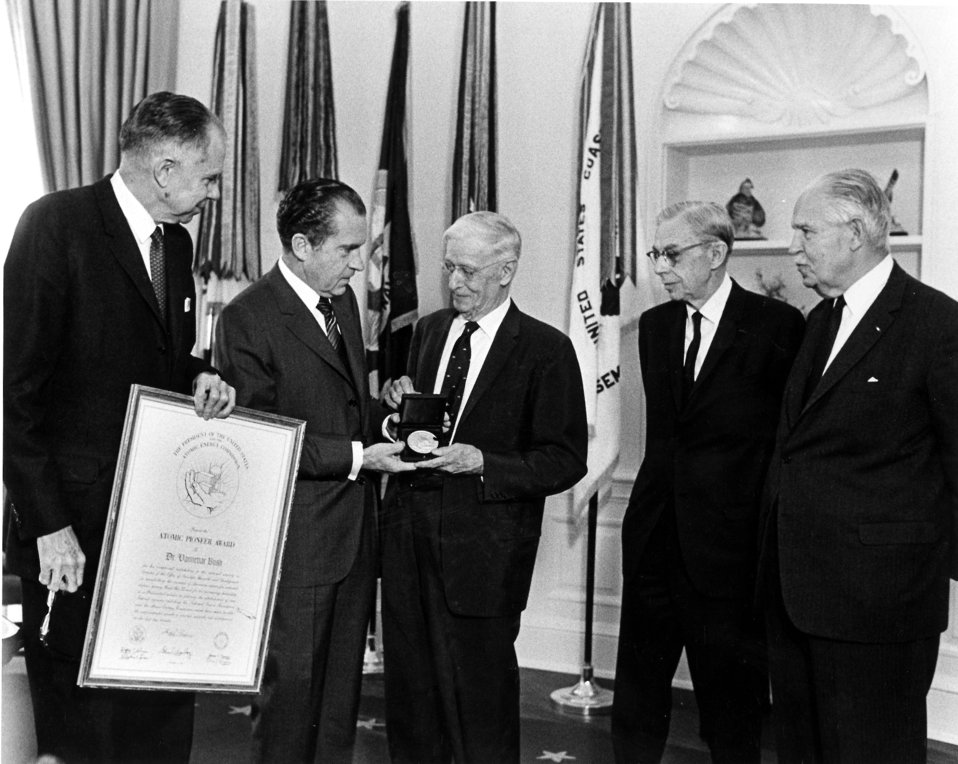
Atomic Pioneers Awards Washington DC

DOE photo by Ed Westcott Three men received The Atomic Pioneers Award Left to right: Dr. Glenn Seaborg, President Nixon, Dr. Vannevar Bush, Dr. James Conant, and Gen. Leslie Groves Nov. 1969